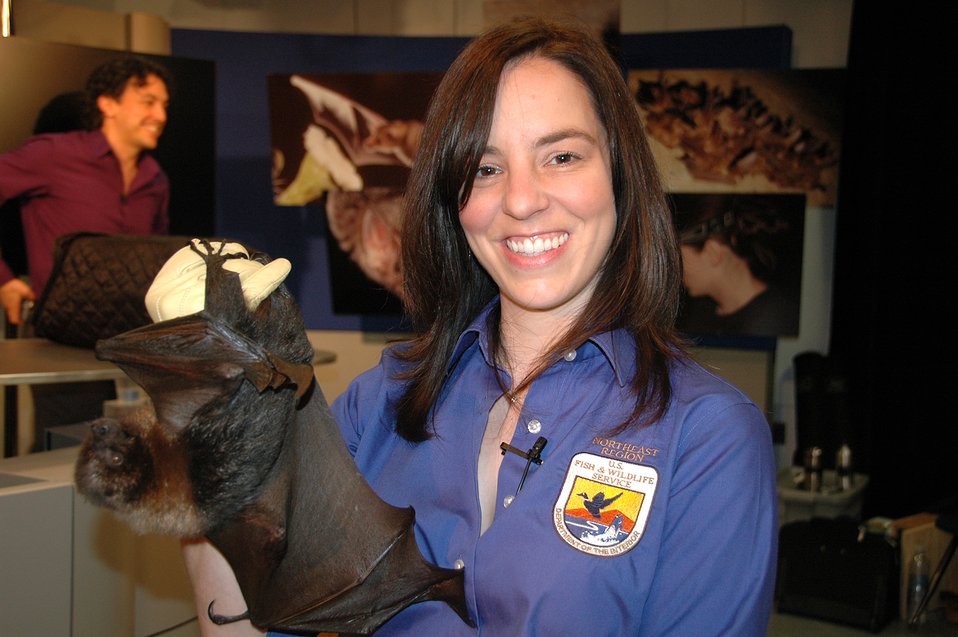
Ann Froschauer with Rodrigues fruit bat

Ann Froschauer (USFWS) and a Rodrigues fruit bat, after the BatsLIVE! Distance Learning Adventure